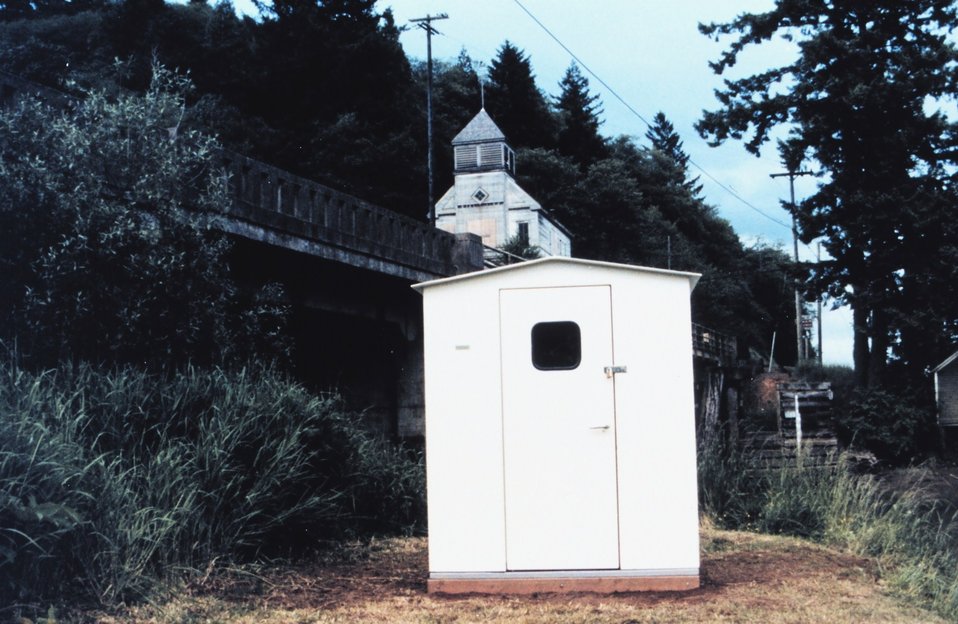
The tide house at Skamokawa - a ghost town on the Lower Columbia River